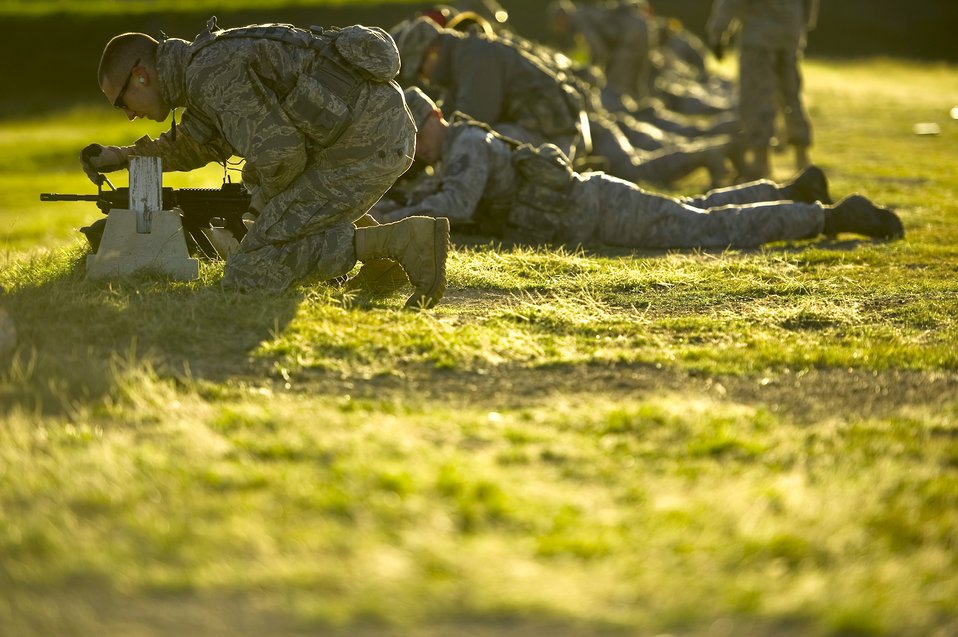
Combat Leadership Course

Staff Sgt. Sean Hooper makes adjustments to his M4 Carbine during rifle training Oct. 29, 2010, at Camp Bullis, Texas, during the Combat Leadership Course. These Airmen are learning a variety of skills, helping them be a more successful team leader.